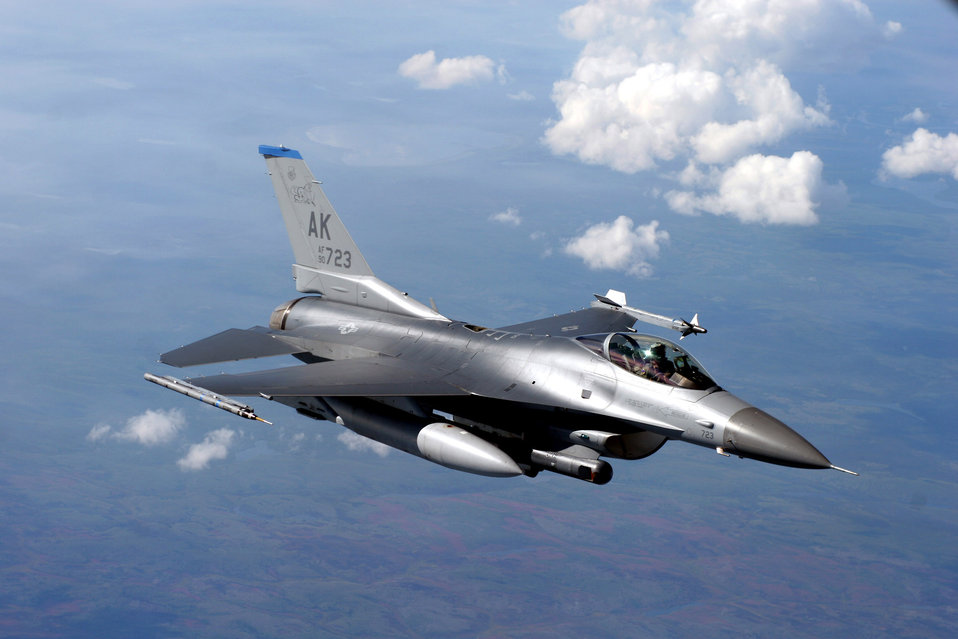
Eagles, Falcons wave a Red Flag

An F-16 Fighting Falcon from the 18th Fighter Squadron at Eielson Air Force Base, Alaska, prepares to refuel from a KC-135 Stratotanker at Red Flag-Alaska July 20. More than 80 aircraft and 1,500 servicemembers from six countries are participating in the exercise July 12 to 27 to sharpen their combat skills in simulated combat sorties. Red Flag-Alaska's multinational participation and the addition of the Pacific Alaskan Range Complex assets provide realistic combat training in a safe and controlled setting.